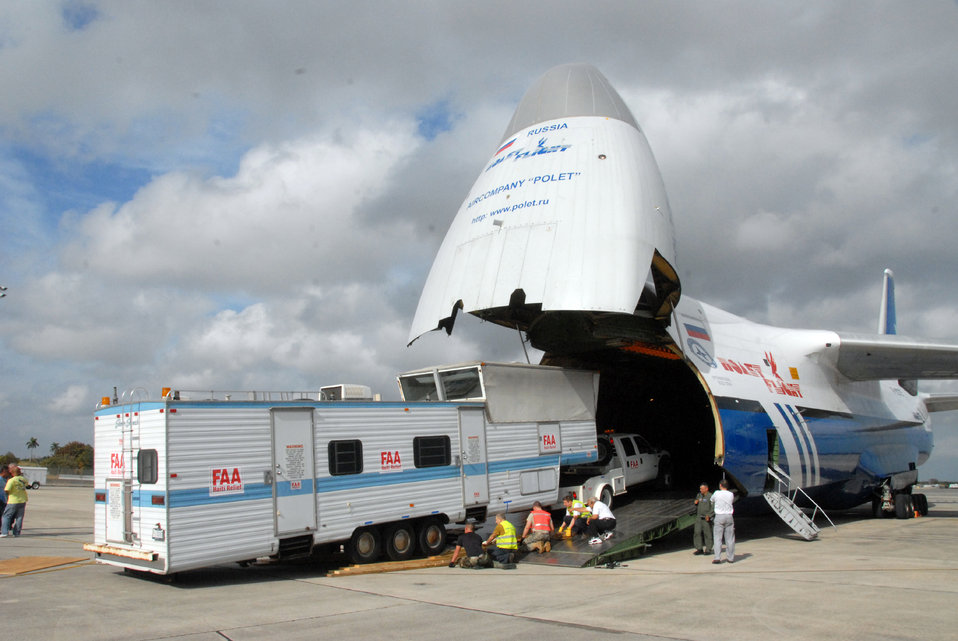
Haiti relief

A mobile air traffic control tower is loaded onto a Russian Antonov An-124 cargo plane at Homestead Air Reserve Base, Fla., Jan. 21, 2010. The mobile air traffic control tower will increase the efficiency of aid being delivered to earthquake victims in Haiti.